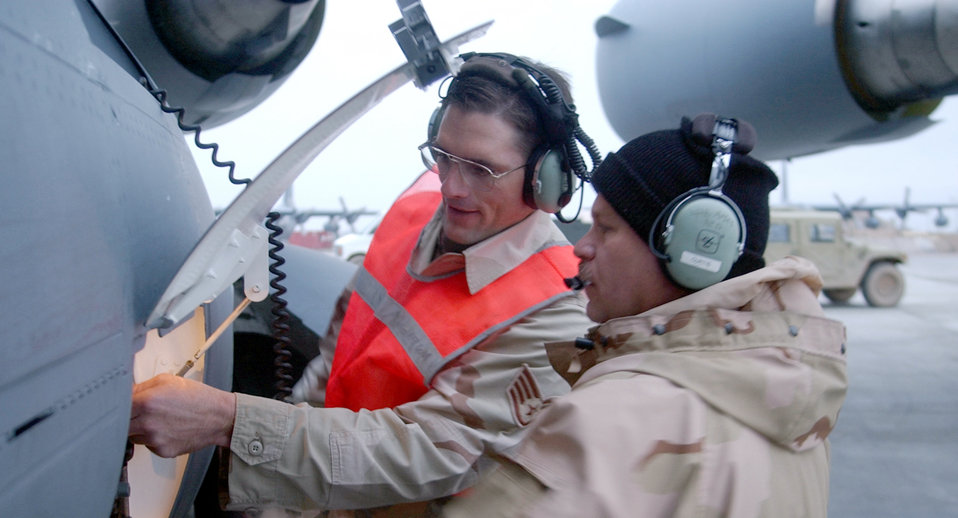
Small base has big mission

KARSHI-KHANABAD AIRFIELD, Uzbekistan -- Staff Sgt. Shannon Barry (left) and Tech. Sgt. Bill Curtis prepare a visiting C-17 Globemaster III for refueling here. Both sergeants are transient alert specialists with the 416th Expeditionary Operations Group.